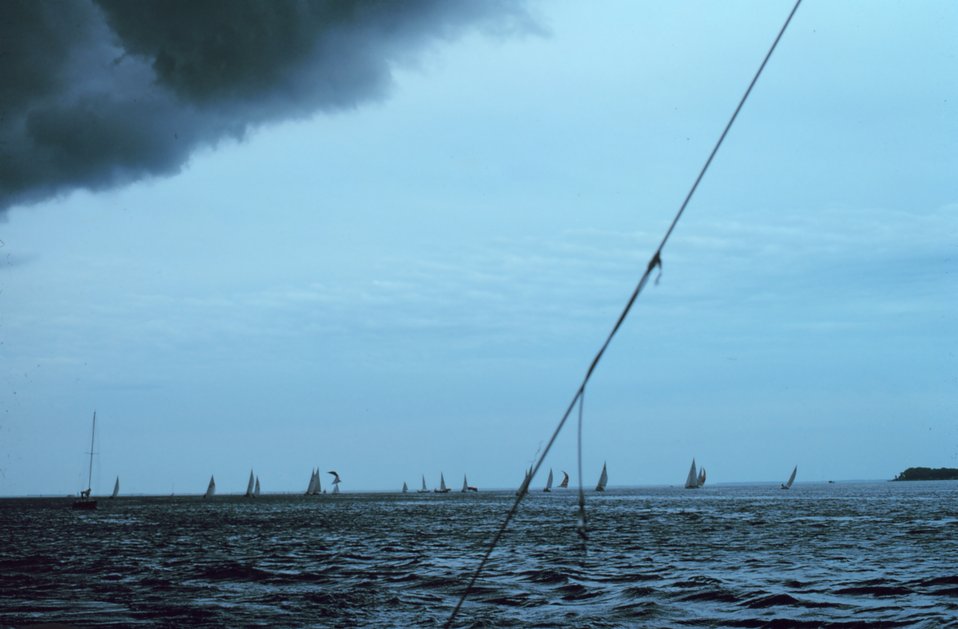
A squall line threatens sailors